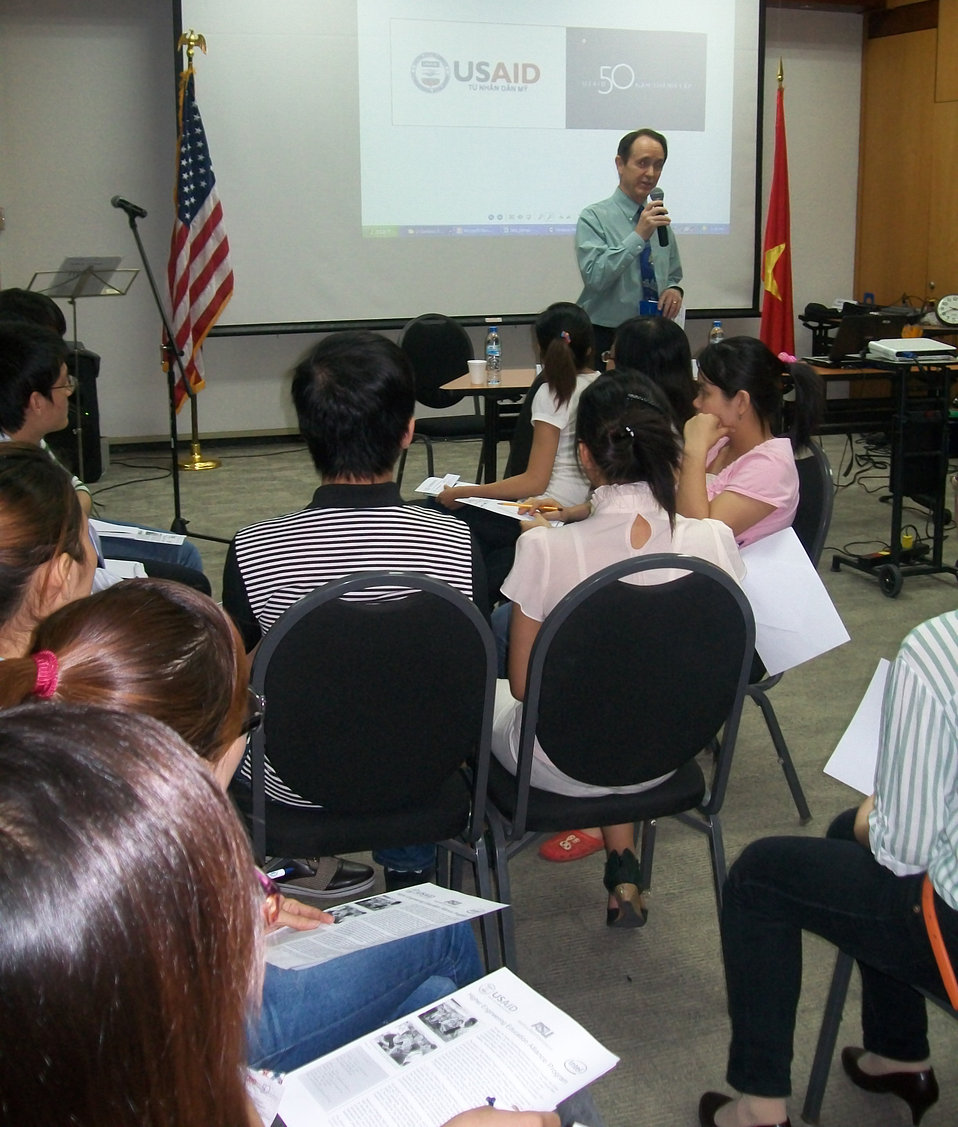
American Center and USAID host Debate Club on Higher Education

USAID/Vietnam Mission Director Francis Donovan address students and discusses the USAID-supported Higher Engineering Education Alliance Program with Arizona State University, Intel, and others.